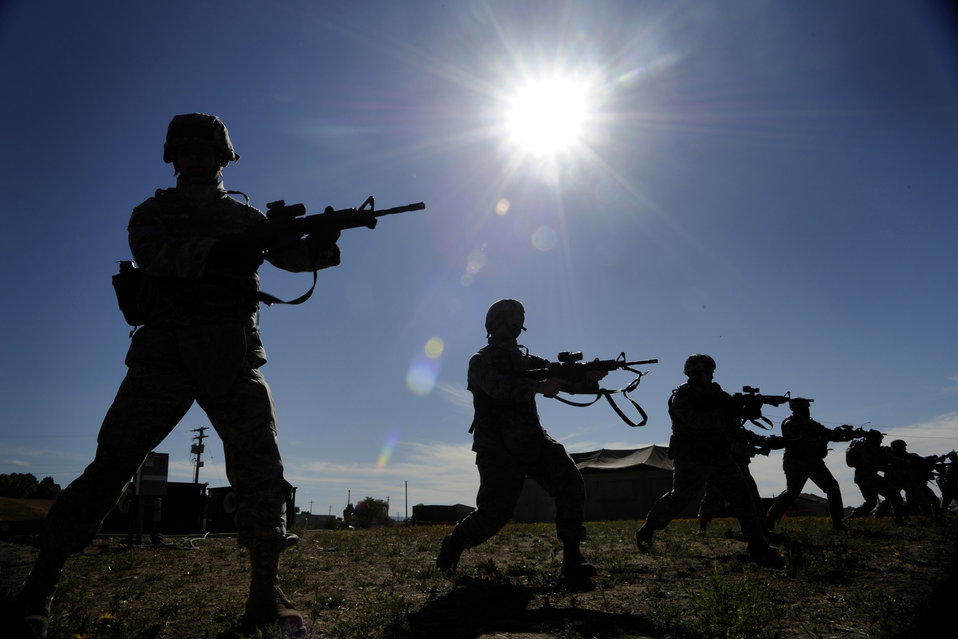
Security forces prepare for combat at Hill

Security forces Airmen and augmentees line up in a defensive stance during security forces combat readiness training Sept. 13, 2010, at Hill Air Force Base, Utah. The course provides Airmen with the basic skills needed to deploy to include tactical movements, land navigation and self-aid buddy care.